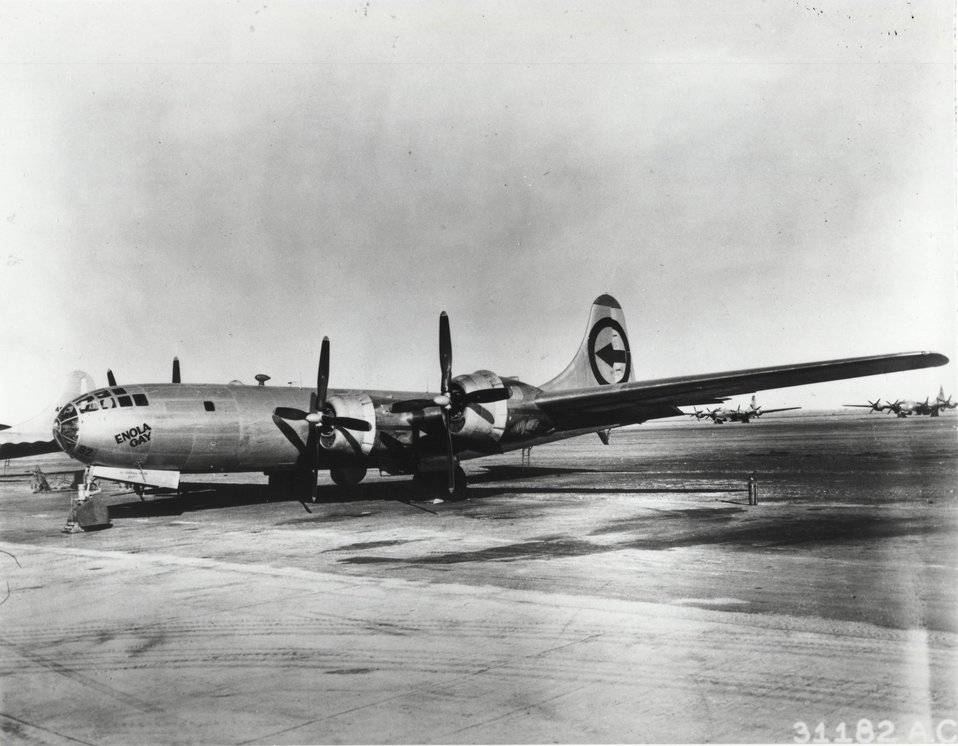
ENOLA GAY